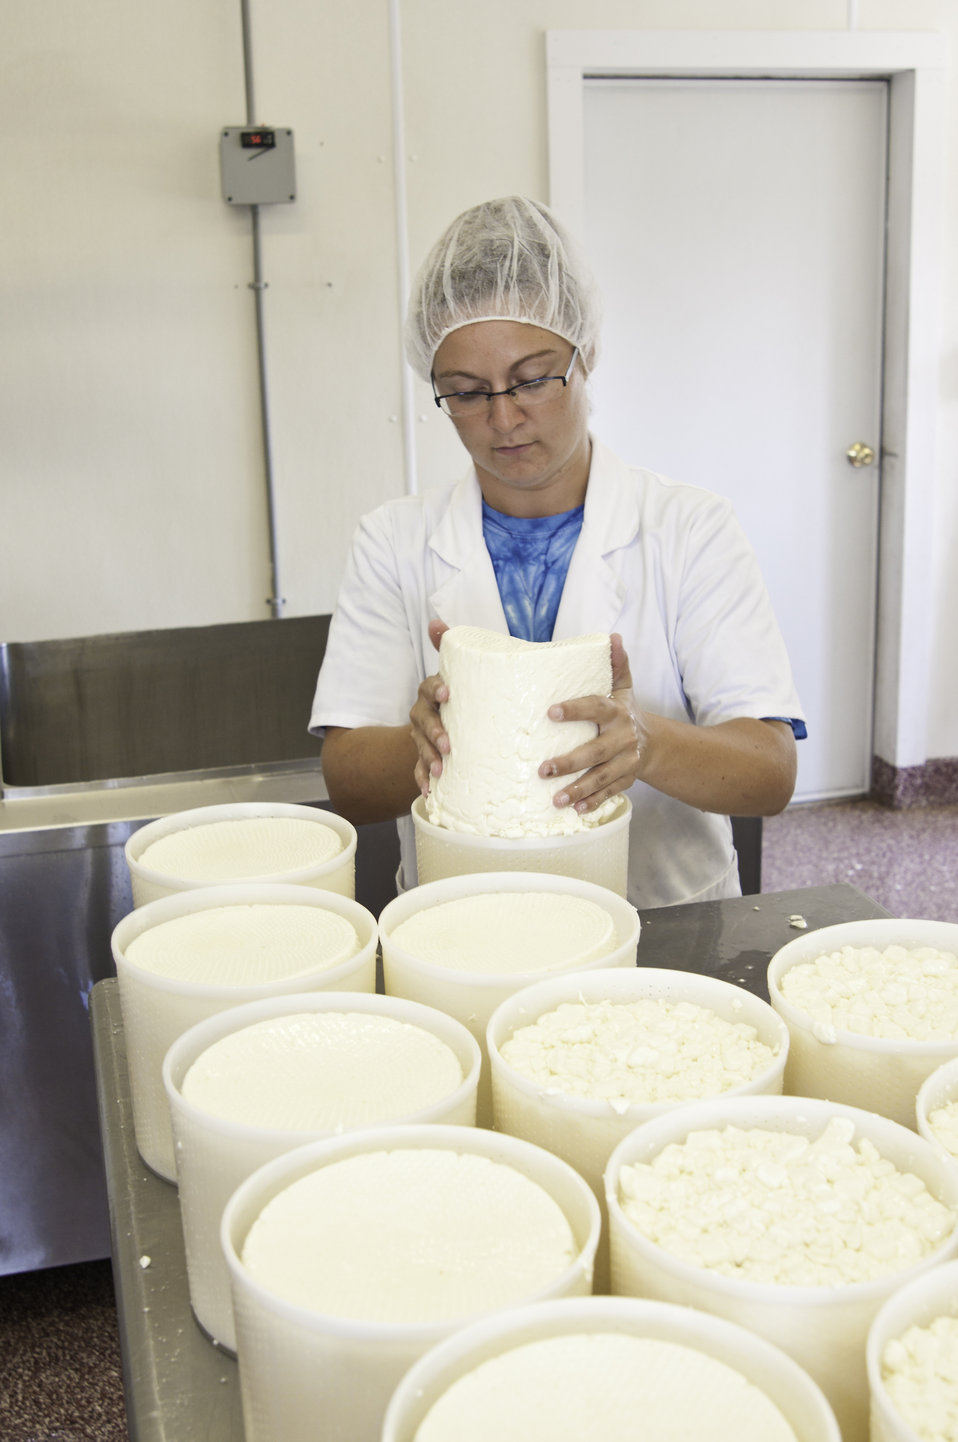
Chapel’s Country Creamery farm manager Courtney Biggs turns milk curd in the hooping process at Chapel’s Country Creamery in Easton, MD, the curd will drain in the cheese hoops for 24 hours being turned during the process until the whey has drained and the curd has settled in a cheese round. The cheese is then aged 60 days or longer. The dairy’s Chapelle, Talbot Reserve and Bay Blue are placed in a climate-controlled cave, which gives the cheese its unique flavor. The cave-aged cheeses develop their own natural rind.